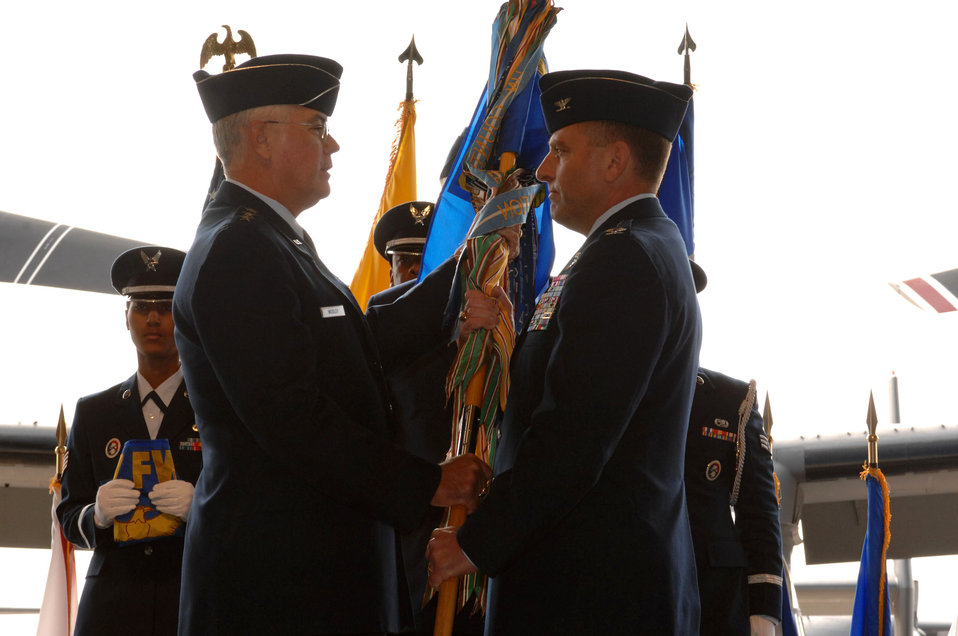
New chapter for Air Force special operations begins

Lt. Gen. Michael Wooley (left) passes the guidon of the newly formed 27th Special Operations Wing to the new commander, Col. Tim Leahy, during a ceremony Oct. 1 at Cannon Air Force Base, N.M. General Wooley is the Air Force Special Operations Command commander.